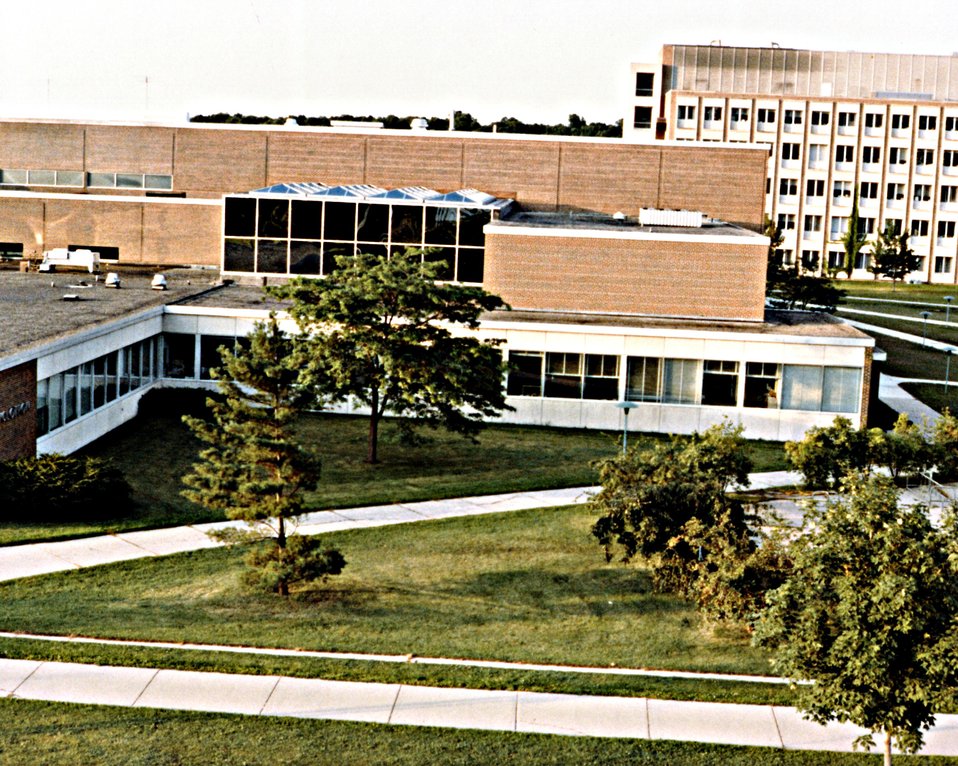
THE WEST WING WITH THE GLASSED-IN MEETING AND DISCUSSION AREA.

THE NATIONAL SUPERCONDUCTING CYCLOTRON LABORATORY IS BEING CONSTRUCTED FOR DOE AT MICHIGAN STATE UNIVERSITY. THE FACILITY IS BASED ON A NEW KIND OF PARTICLE ACCELERATION, THE SUPERCONDUCTING CYCLOTRON, WHICH WILL BE USED TO STUDY THE NUCLEAR REACTIONS BETWEEN 'HEAVY IONS'. USING ULTRA- COLD, SUPERCONDUCTING TECHNOLOGY FOR THE POWER COILS HAS RESULTED IN A COMPACT CYCLOTRON WITH A UNIQUELY HIGH ENERGY GAIN. THE LABORATORY IS AN EXTENSION OF AN EXISTING FACILITY AND WILL PROVIDE A SECOND-STEP SUPERCONDUCTING CYCLOTRON AND ADDITIONAL EXPERIMENTAL AREAS, BEAM TRANSPORT SYSTEMS, RADIATION SHIELDING, AND SUPPORT AREAS.